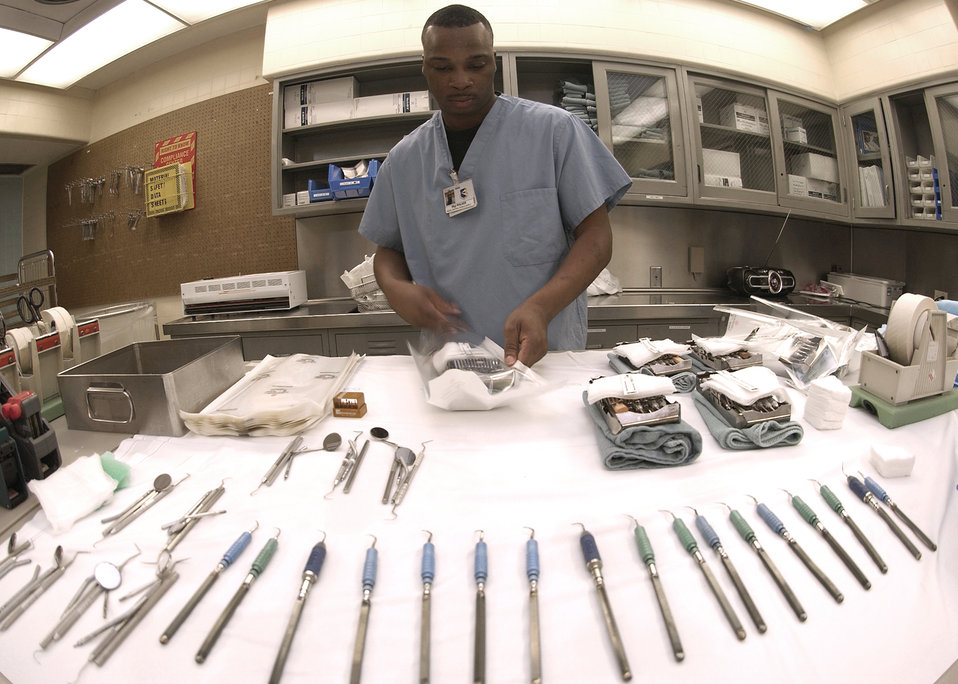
Armed to the teeth

Staff Sgt. Bobby Walker sorts dental instruments and prepares them for sterilization at Davis-Monthan Air Force Base, Ariz., on Aug. 10. The 355th Dental Squadron provides services for more than 7,000 active-duty Airmen at Davis-Monthan so that they may remain mission ready.